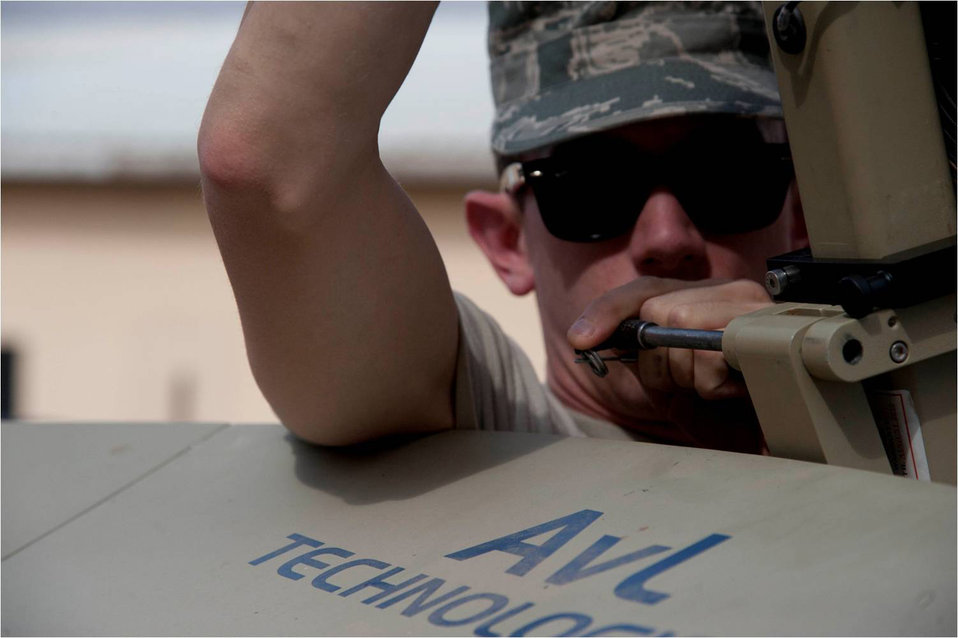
CJTF Horn of Africa

Tactical Networking technician Senior Airman Robert Morrison, assigned to Combined Joint Task Force –Horn of Africa’s communications directorate, maintains an access point satellite terminal here April 19, 2012. These terminals allow for mobile use for computers and phones by U.S. personnel in their area of operation, anywhere in the world.